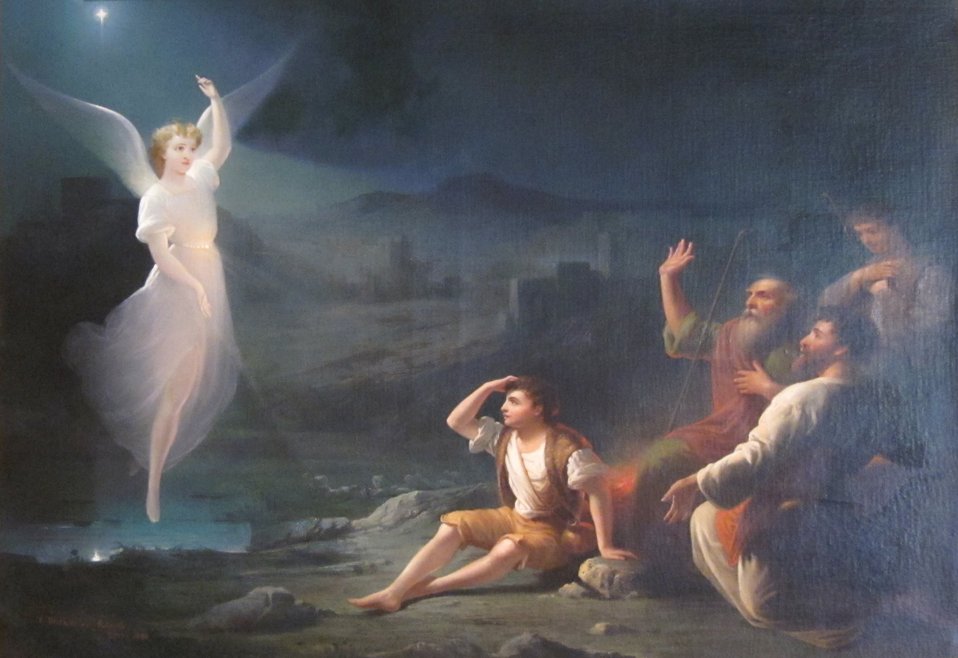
'The Angel Appearing before the Shepherds' by Thomas Buchanan Read, Dayton Art Institute